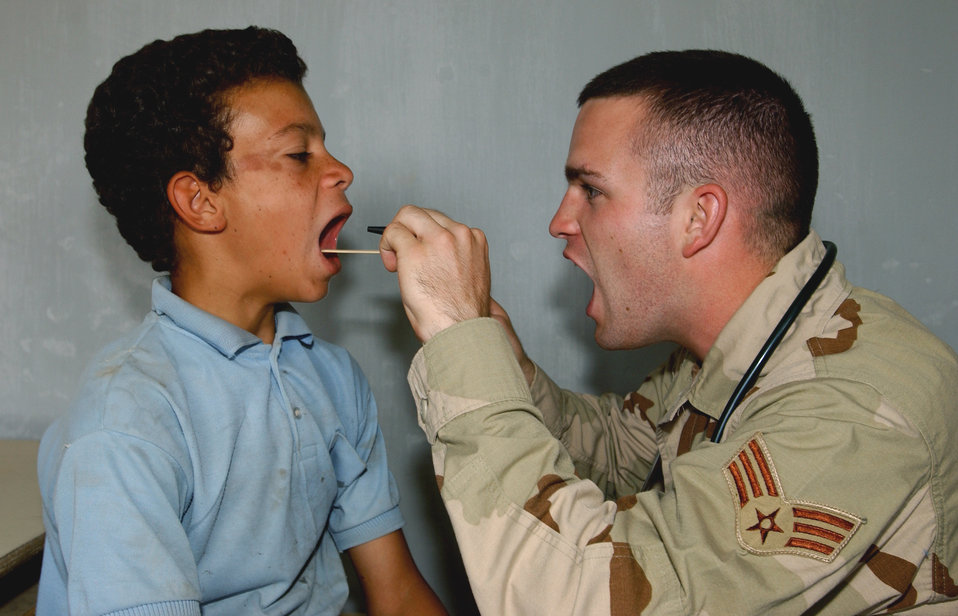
Say Ahhh!

SWABE, Iraq -- Senior Airman Matthew Read convinces his patient to open wide here during a medical and humanitarian assistance mission. Read is deployed with the 101st Expeditionary Rescue Squadron from the Air National Guard's 122nd Medical Group, in Fort Wayne, Ind.